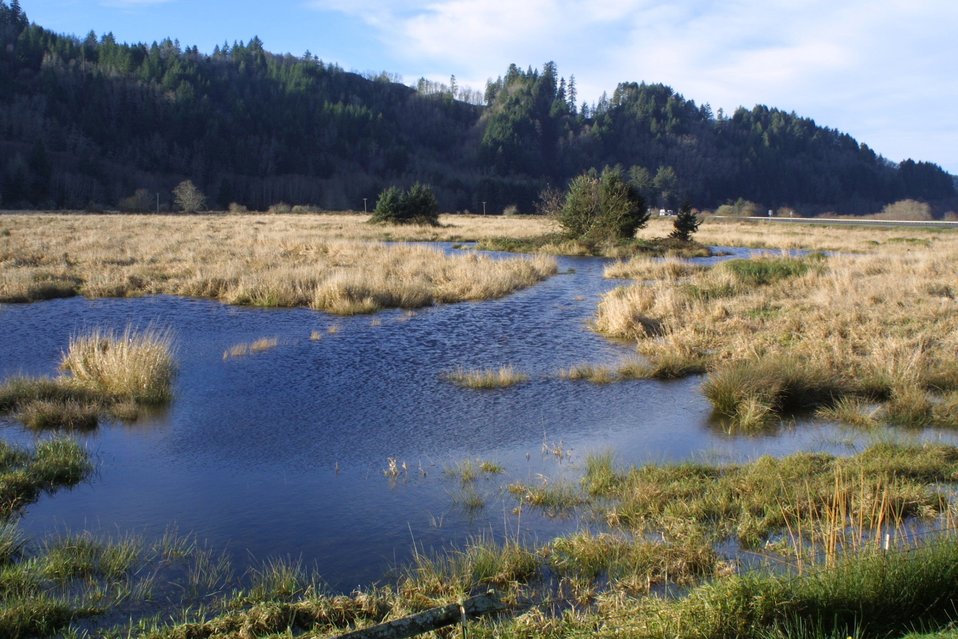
Wetlands at the Dean Creek Watchalbe Wildlife site near Reedsport, Oregon.